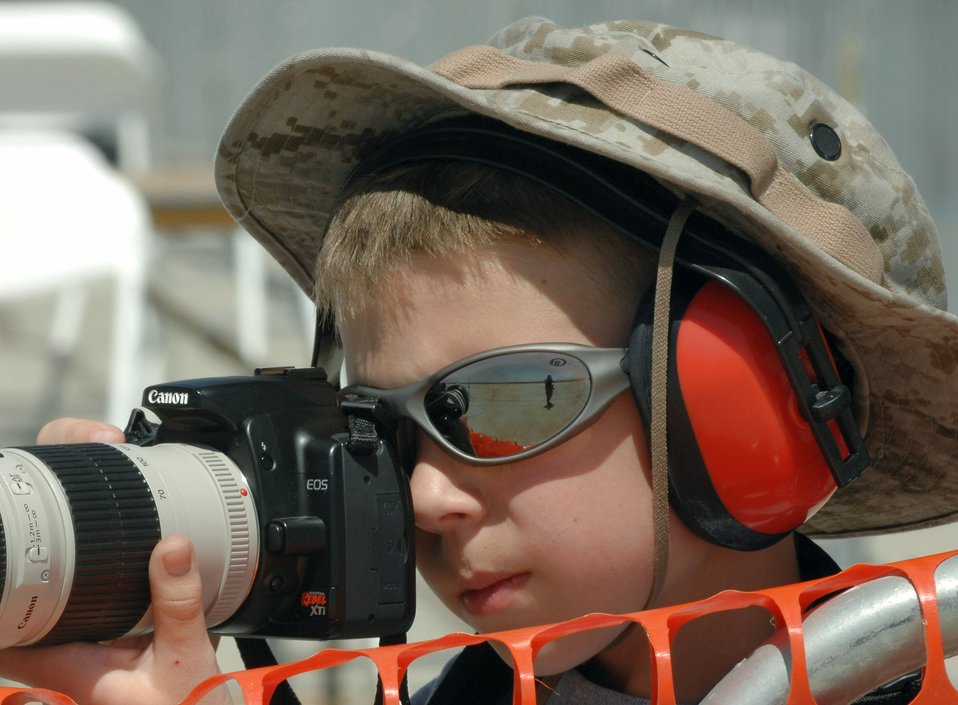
A budding Ansel Adams

Daniel Thow, 9, photographs the U.S. Air Force Thunderbirds May 2 at AirFest 2008 at March Air Reserve Base, Calif. Daniel has been a photographer since he was 6, but has been going to air shows with his father John since he was 4.